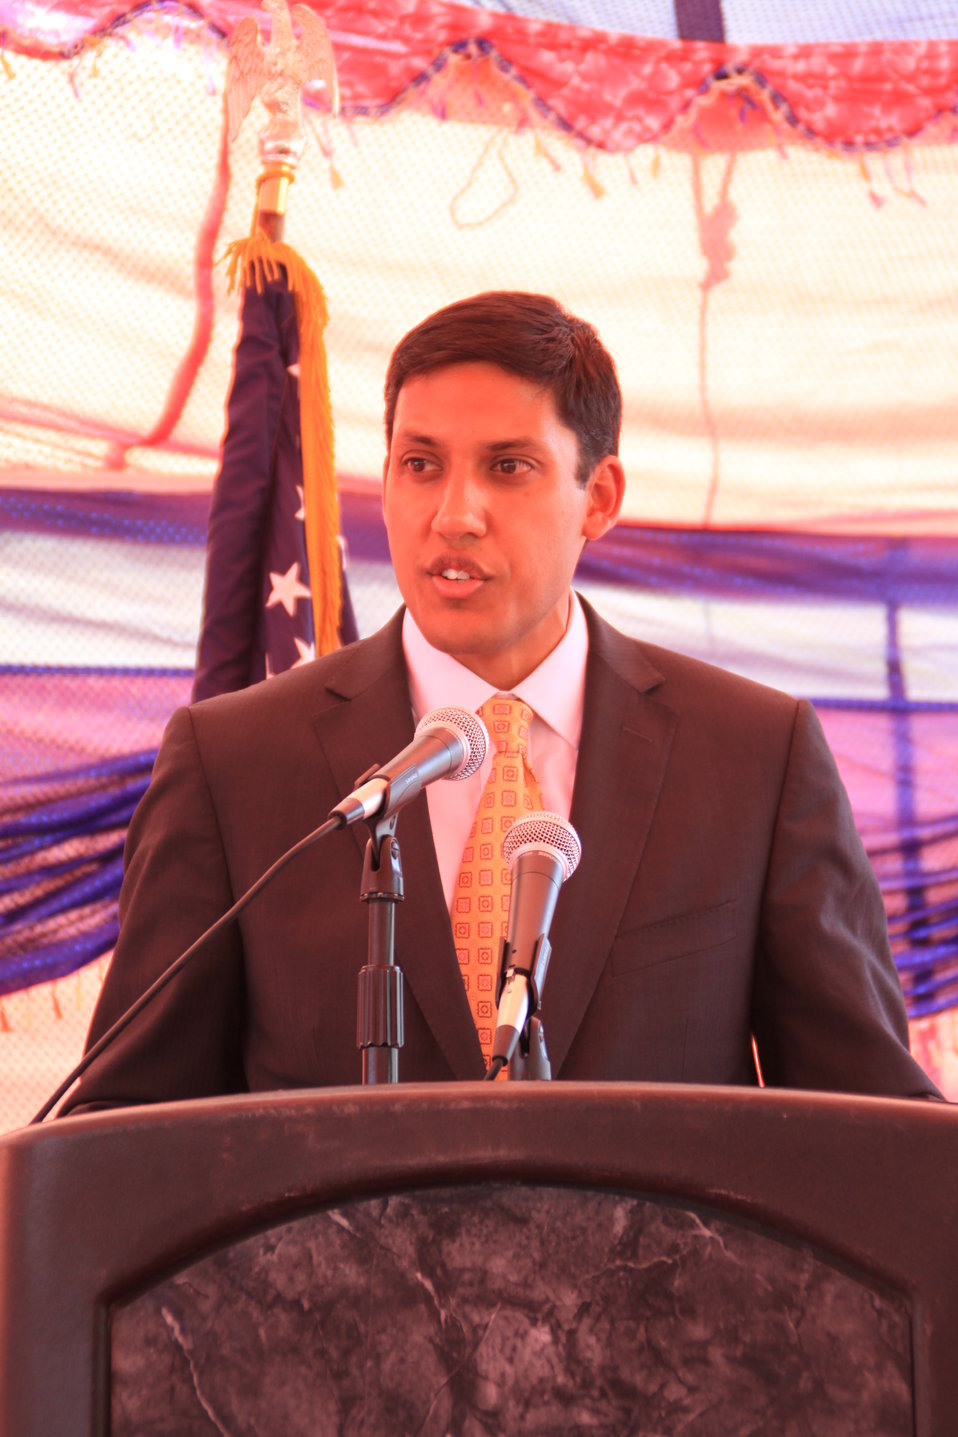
Badam Bagh Farm